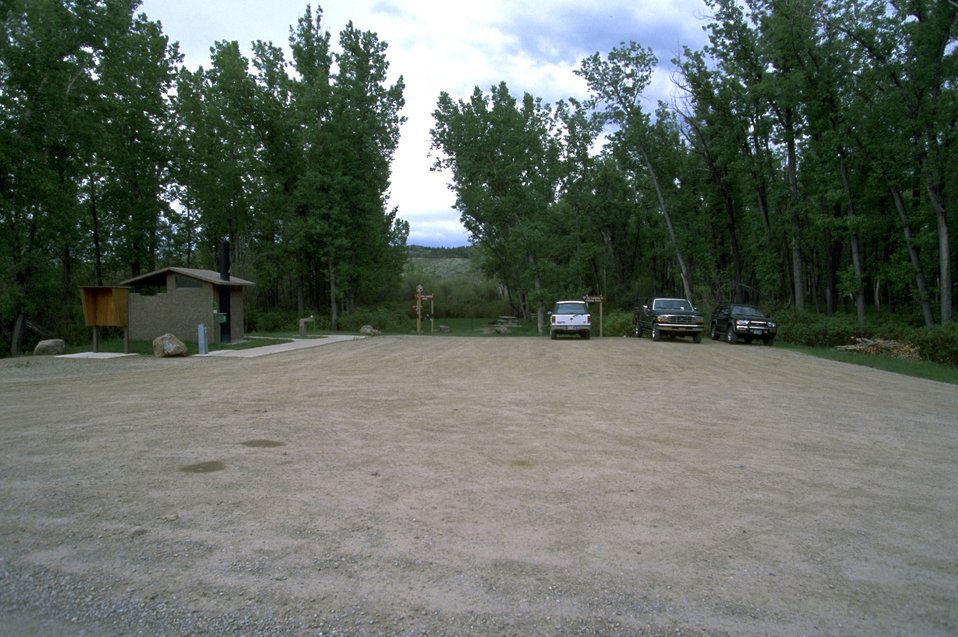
Outhouse, parking lot and trees